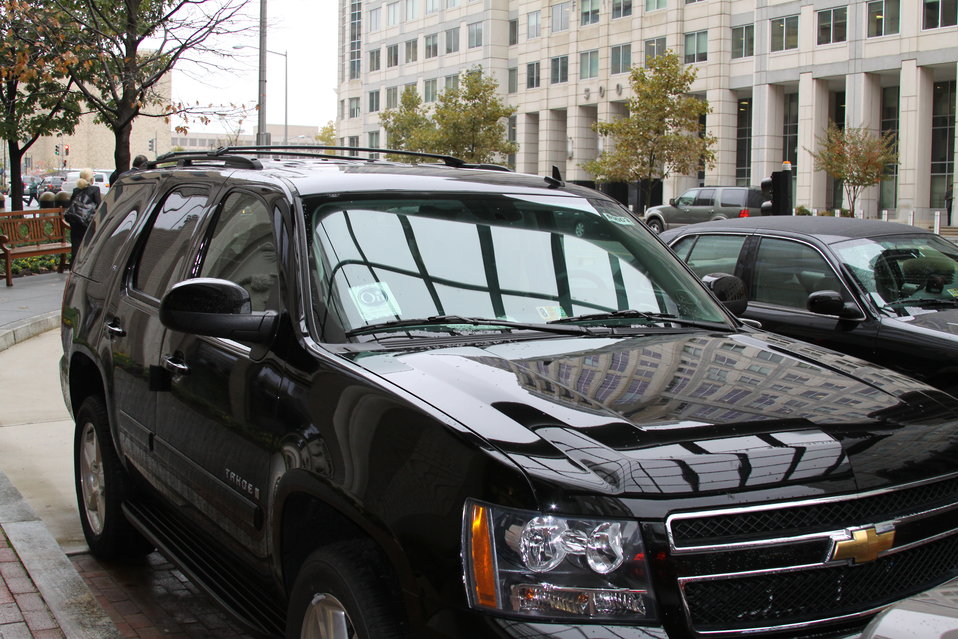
FCC Official Vehicle Tour